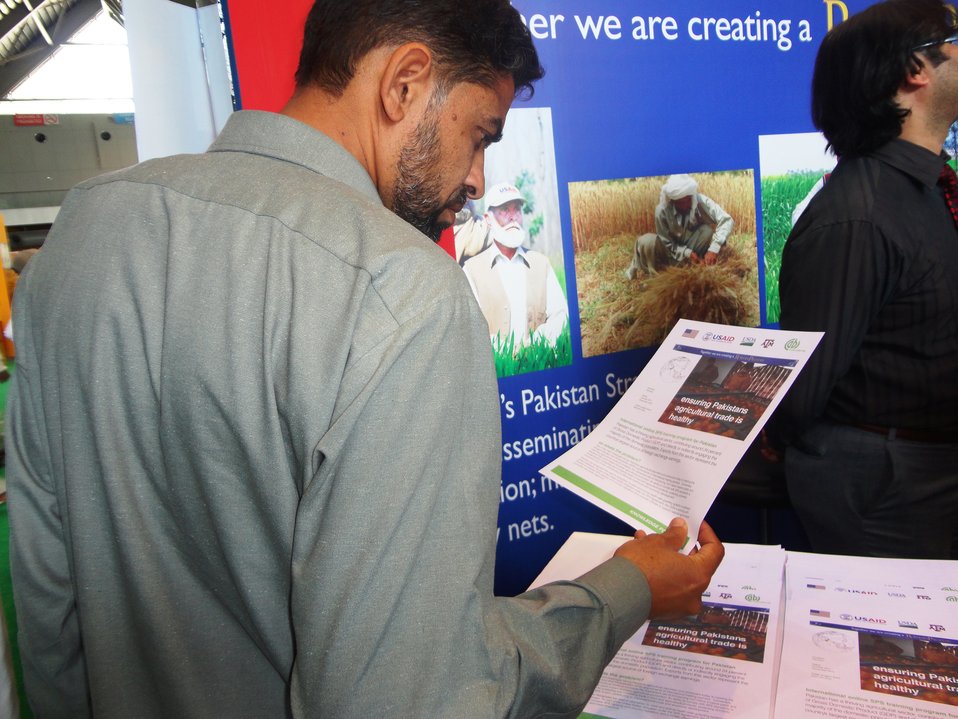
USDA SPS Project at the DAWN Sarsabaz Agri Expo

Visitor taking interest in the SPS brochure displayed at USDA Stall at the Dawn Sarsabz Agri Expo.